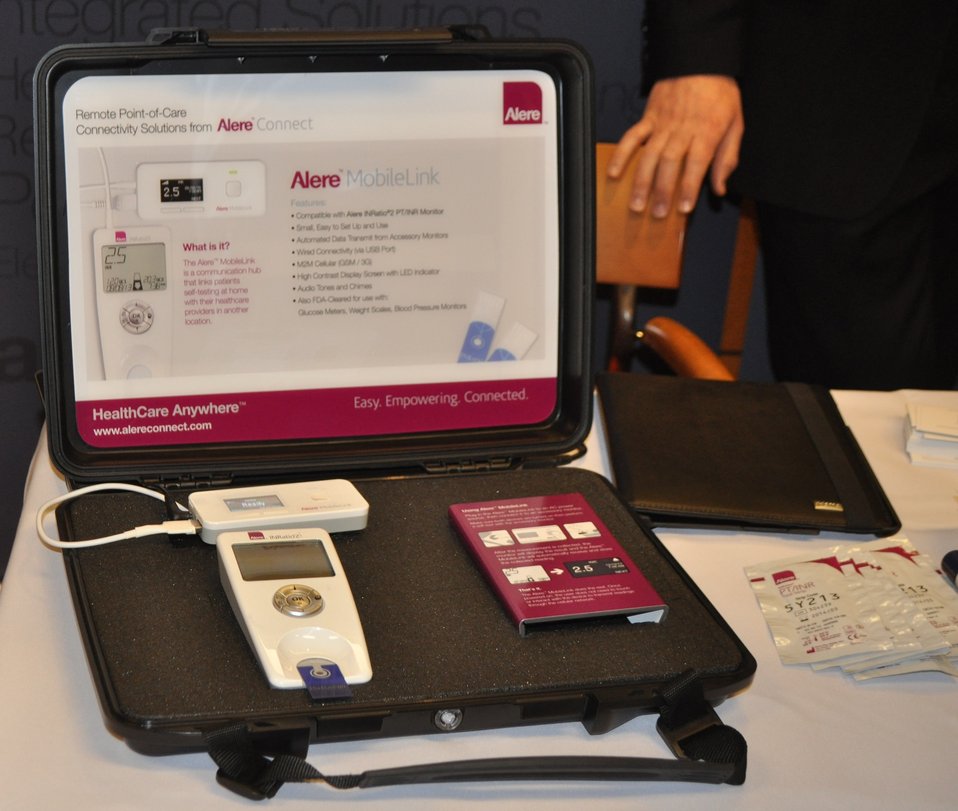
12.6.13 mHealth Innovation Expo

FCC mHealth Innovation Expo.